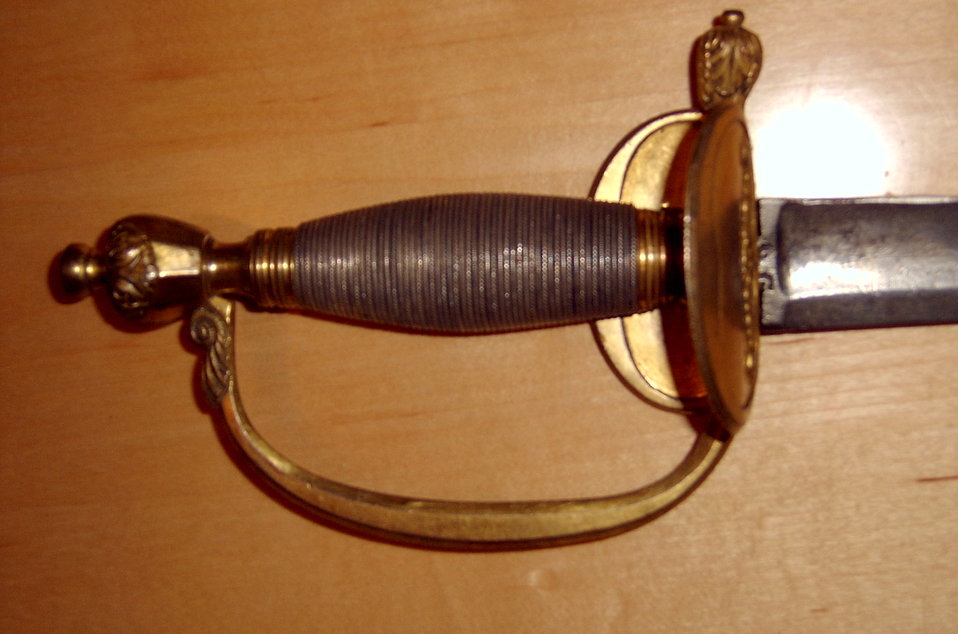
A photo by epeeist smudge of a 1796 pattern sword in his collection